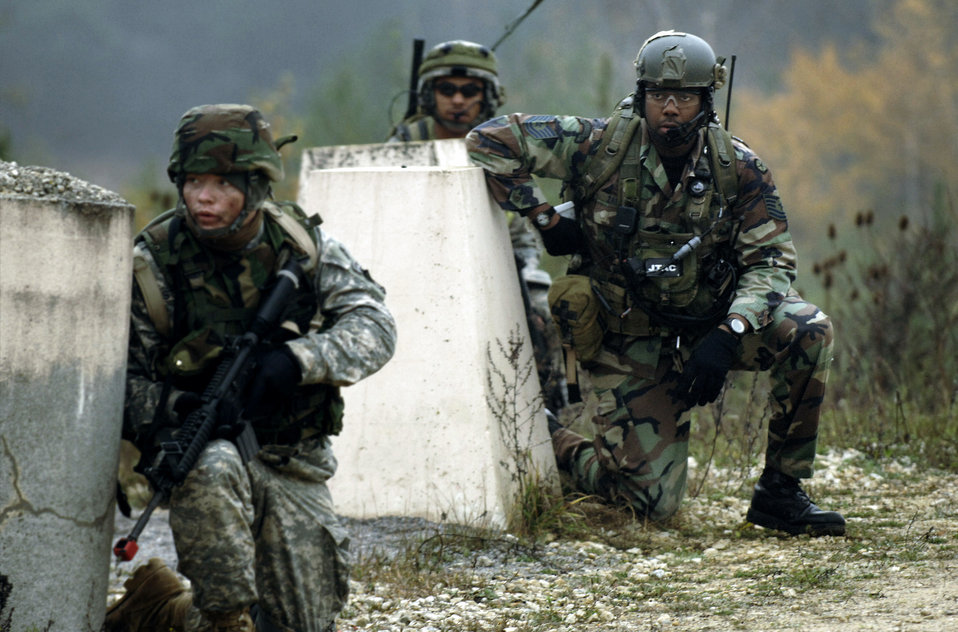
Forward air controllers prepare for war

Tech. Sgt. Robert Zackery evaluates an urban warfare scenario involving joint terminal air controller and Army Soldiers during Exercise Allied Strike II Nov. 6 at Hohenfels Army Garrison, Germany. The U.S. Soldiers with 173rd Air Brigade Combat Team, 191 Cavalry, provided a sense of realism to the week-long JTAC-centric exercise designed to prepare U.S. Air Forces Europe and NATO JTACs for Operation Iraqi Freedom and Operation Enduring Freedom. Sergeant Zachery is the chief JTAC instructor for the 4th Air Support Operations Group in Heidelberg, Germany.